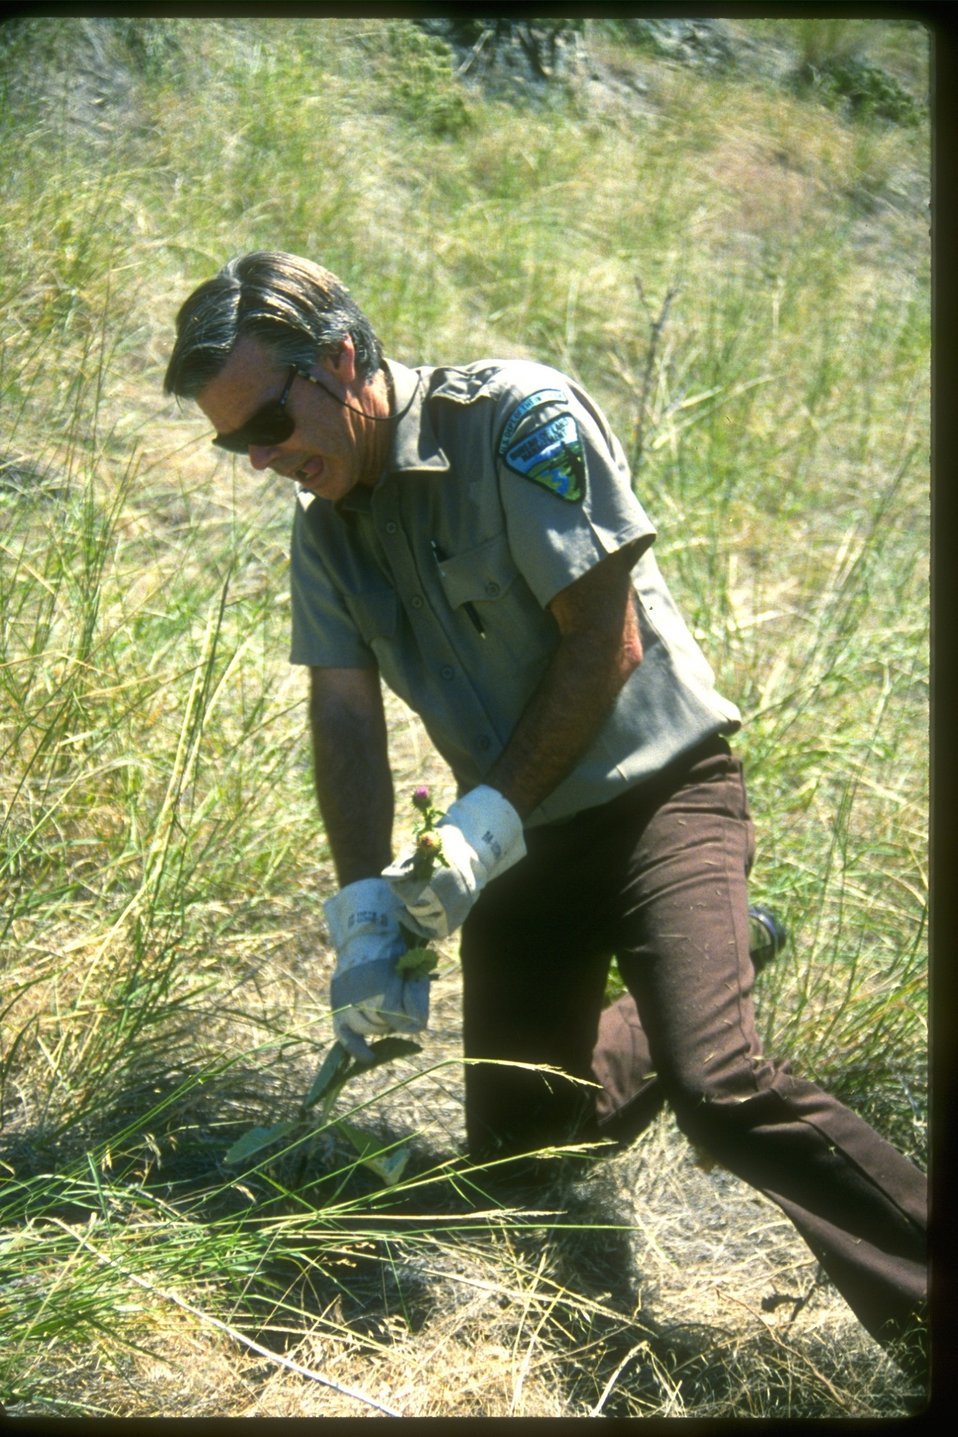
Asher pulling Yellow Starthistle.